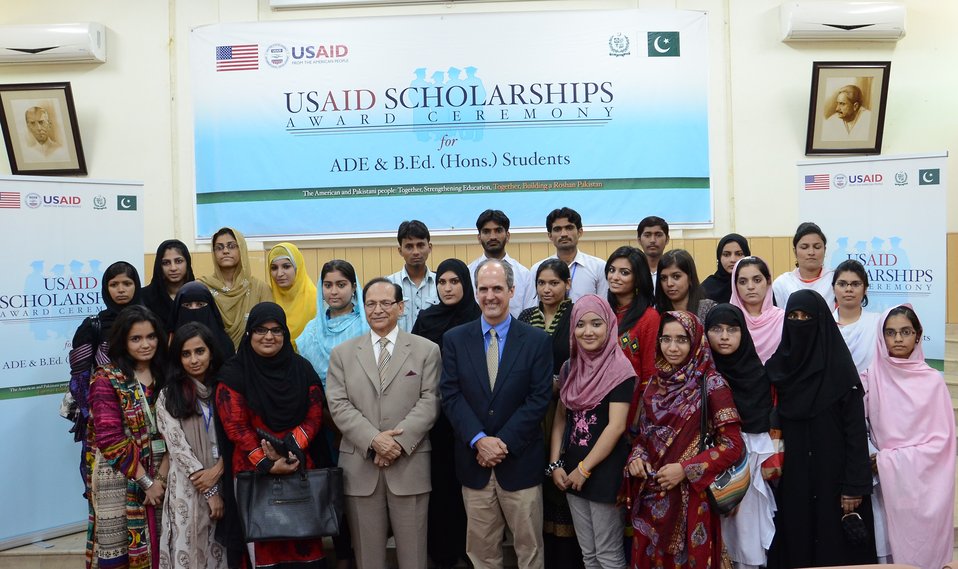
Group photograph of scholarship recipients

The U.S. Agency for International Development (USAID) through its Teacher Education Project awarded scholarships to 147 talented students enrolled in the recently introduced two-year Associate Degree in Education (ADE) and four-year Bachelor’s Degree in Education programs in Punjab.